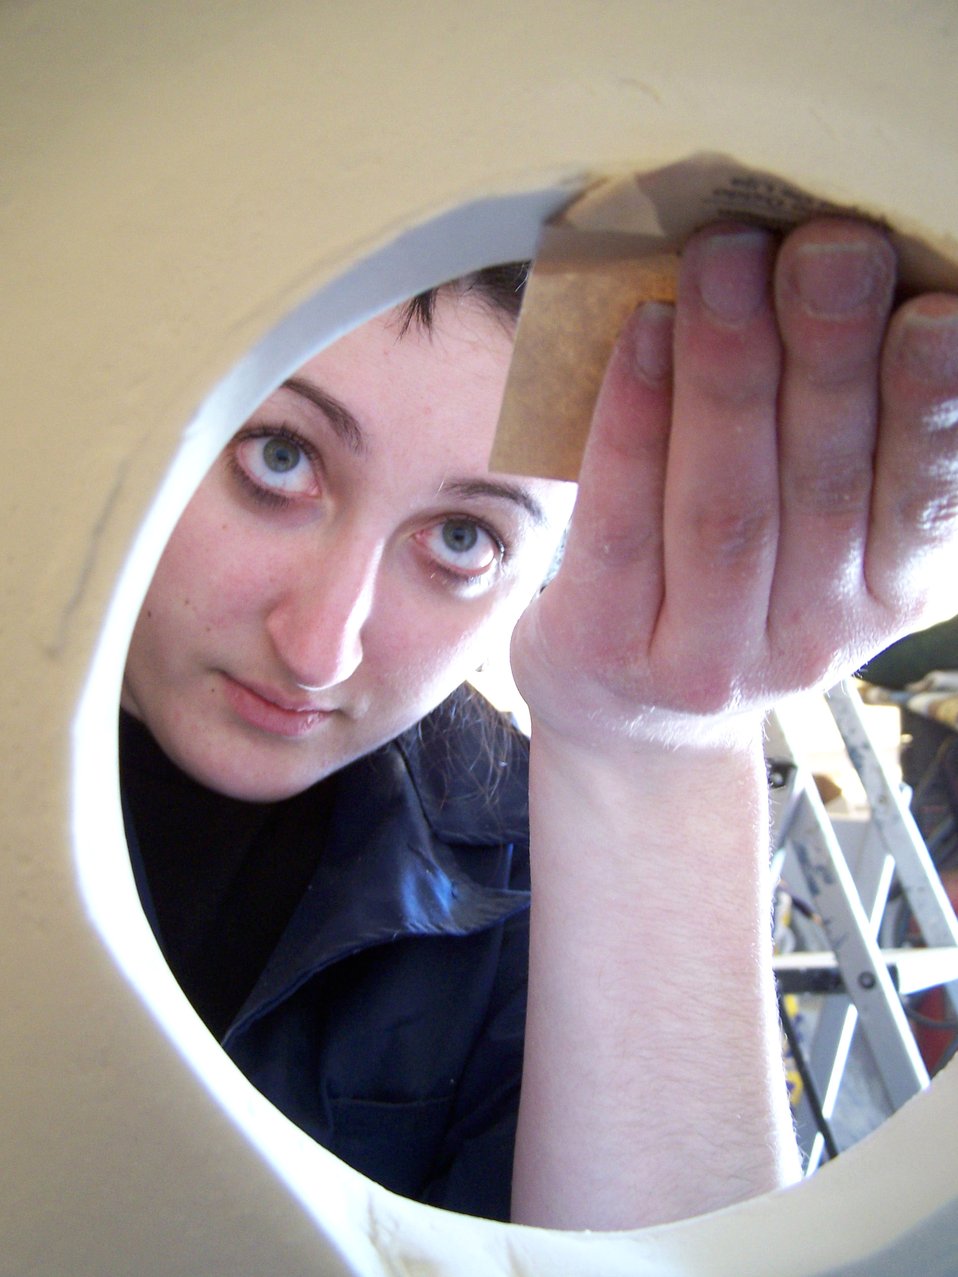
Airmen help pick up the pieces for those in need

Senior Airman Christy Cadle sands the inside of a porceline light fixture in a home being restored in Bay St. Louis, Miss. The home was damaged by Hurricane Katrina more than a year ago. Airman Cadle is a maintenance specialist assigned to the 354th Aircraft Maintenance Squadron from Eielson Air Force Base, Alaska. She was one of five Airmen who travelled from Eielson AFB to the Gulf coast to repair Hurricane Katrina-damaged homes.